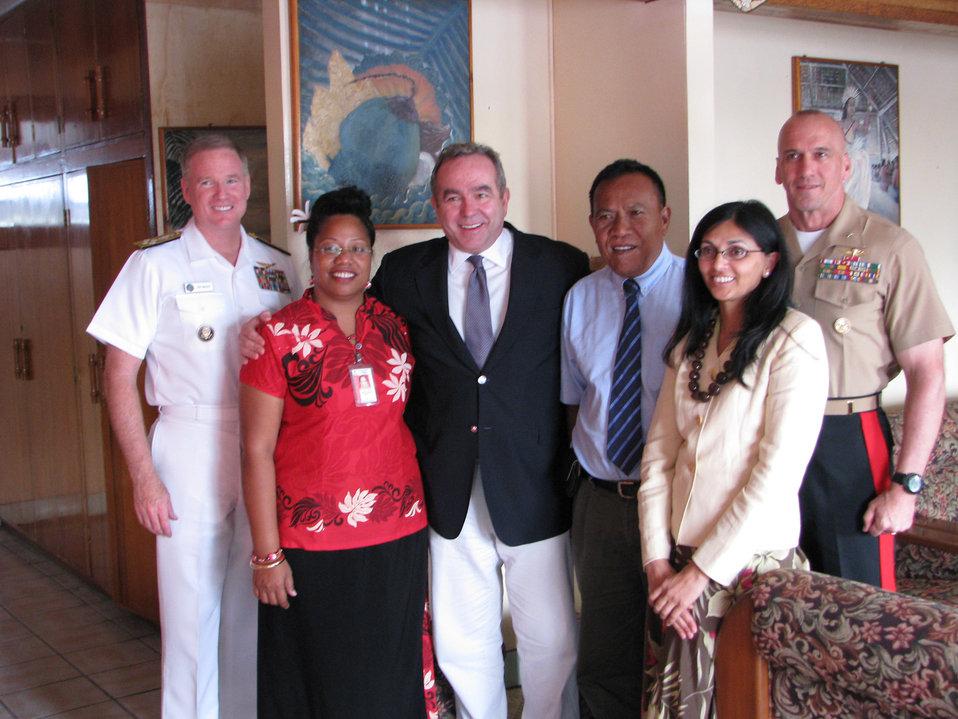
Assistant Secretary Campbell, Adm. Walsh, Brig. Gen. Simcock, and USAID Assistant Administrator Biswal Are Greeted By Kiribati Foreign Secretary Lambourne

Assistant Secretary for East Asian and Pacific Affairs Kurt Campbell, center, poses for a photo with Kiribati Foreign Secretary Tessie Lambourne, left center, following his arrival at Tarawa International Airport in Kiribati on June 27, 2011. Assistant Secretary Campbell is leading a U.S. delegation set to visit nations throughout the South Pacific that also includes Adm. Patrick Walsh, commander of U.S. Pacific Fleet, left, Office of the Secretary of Defense South/Southeast Asia Principal Director Brig. Gen. Richard Simcock, right, and U.S. Agency for International Development (USAID) Assistant Administrator Nisha Biswal, right center. Kiribati is the first stop on the trip.